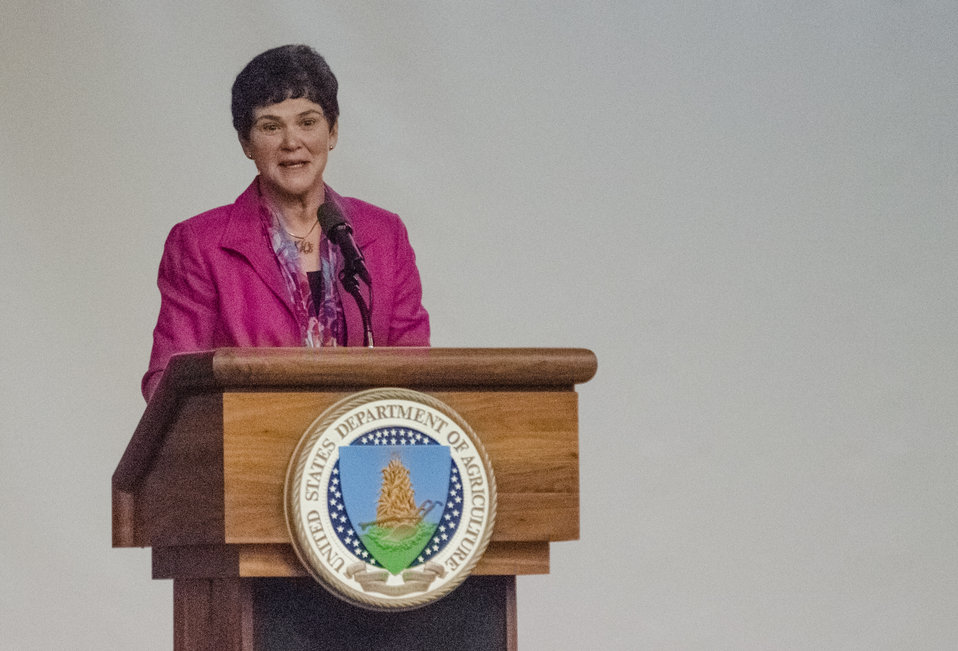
Agriculture Deputy Secretary Krysta Harden speaks at the U.S. Department of Agriculture’s (USDA) Rural Development’s (RD) 2nd Annual Cultural Transformation kickoff opening ceremony and forums, themed “Employees Influencing Change,” on Tuesday, Aug. 13, 2013 at USDA in Washington, D.C.